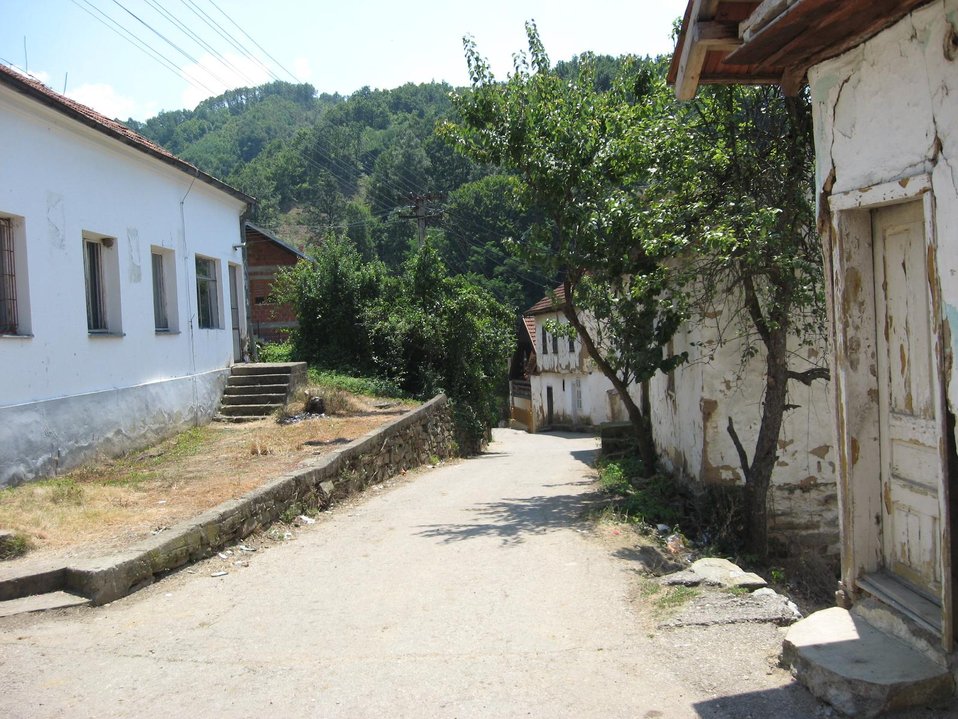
Српски / srpski: Sopstvena slika sela Dadince centar sela